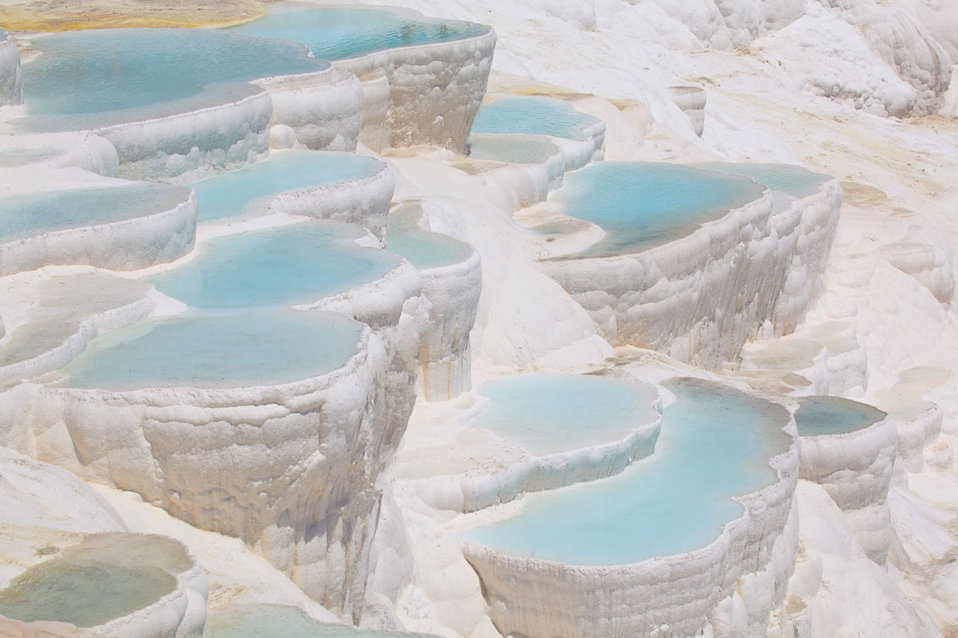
Pamukkale pools

Pamukkale travertines.